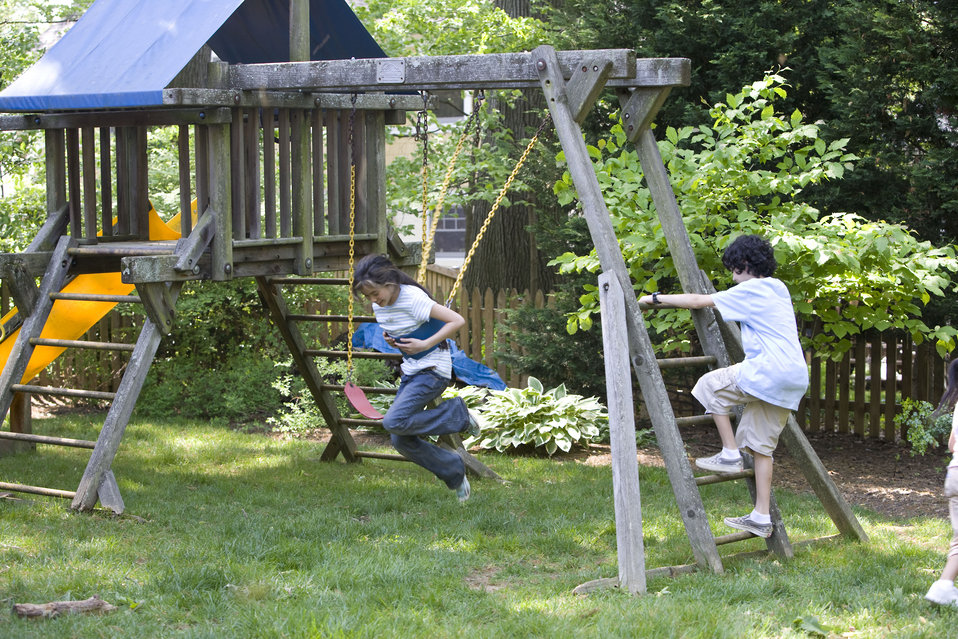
Children love playing outside, and these children were thoroughly enjoying their wooden swing set, and all were having fun in the fresh outdoor air, and the beautiful weather. It's important to note that older wooden playsets may have been treated with arsenic and/or creosote, and therefore, parents need to know if these chemicals were used in their manufacture.